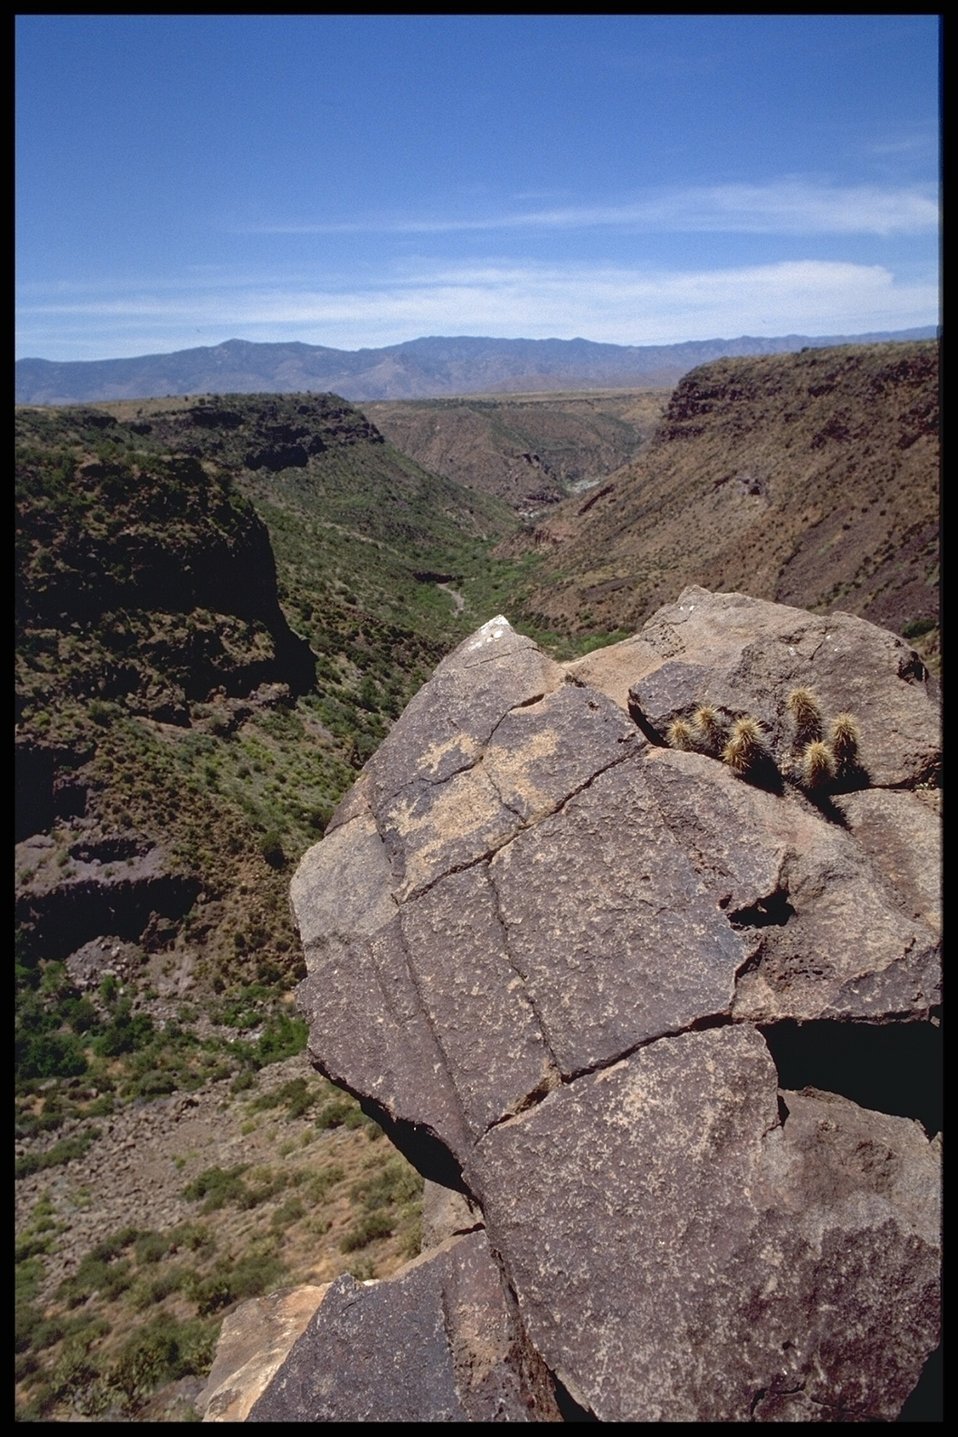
A Petroglyph (Rock Art) is shown with the blue Arizona sky hanging over the 71,000 acre Agua Fria National Monument in the Background.